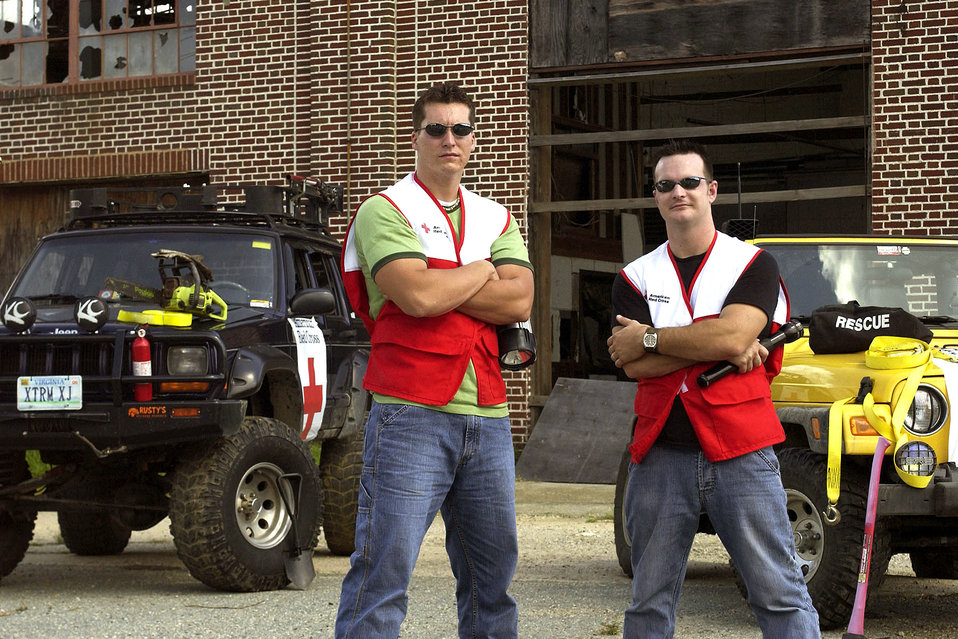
LANGLEY AIR FORCE BASE, Va. -- Senior Airman Mark Leahy (left) and Staff Sgt. Jon Gengnagel are members of the Red Cross disaster assessment team. Airman Leahy is a graphic designer with the 1st Communications Squadron, and Sergeant Gengnagel is a maintenance operation controller with the 1st Maintenance Operations Squadron.